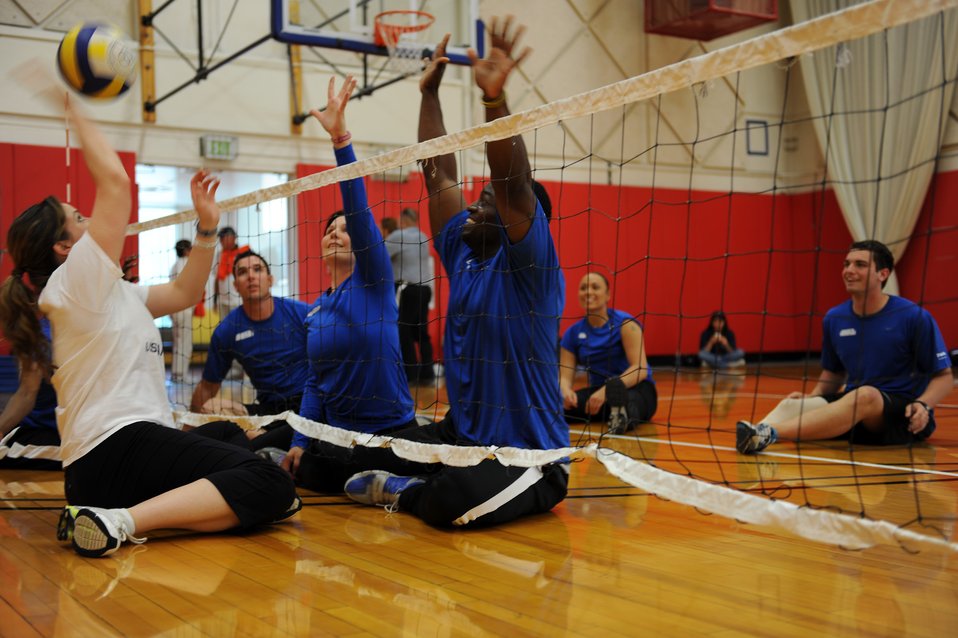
Warrior Games AF Volleyball Practice

Air Force members practice volleyball at the Warrior Games May 10, 2010 at the Olympic Training Center, Colorado Springs. The Warrior Games competition began May 10 and finishes on May 14, 2010 at the U.S. Olympic Training Center in Colorado Springs.